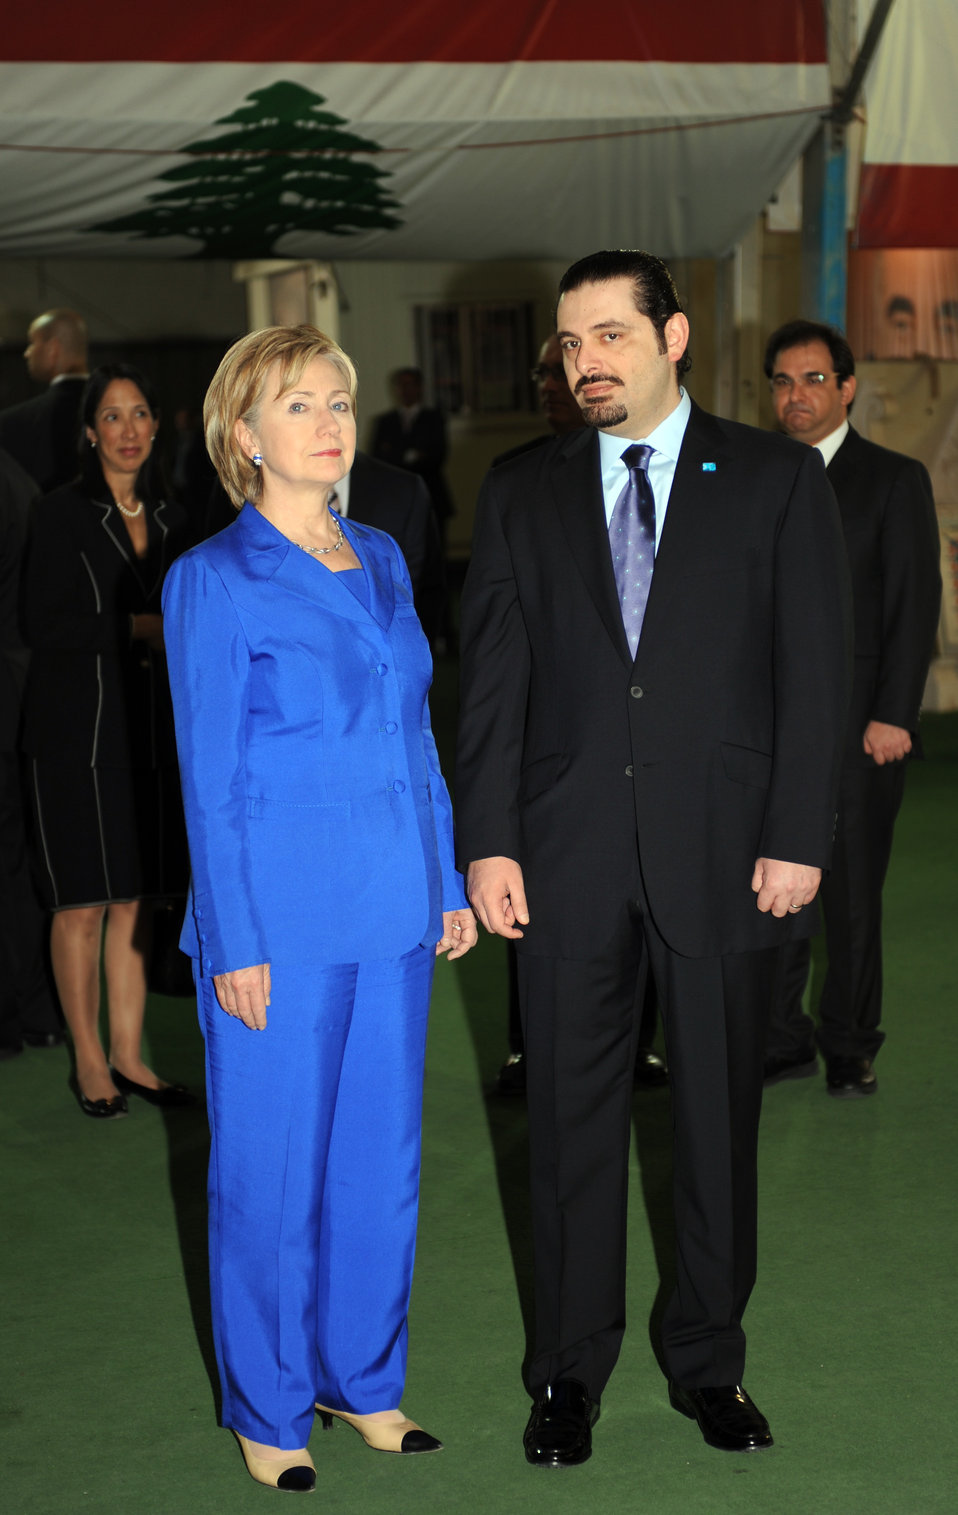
Secretary Clinton Visits Rafic Hariri Gravesite

U.S. Secretary of State Hillary Rodham Clinton with Saad Hariri while departing from the gravesite of former Lebanese Prime Minister Rafic Hariri in Beirut, Lebanon April 26, 2009.